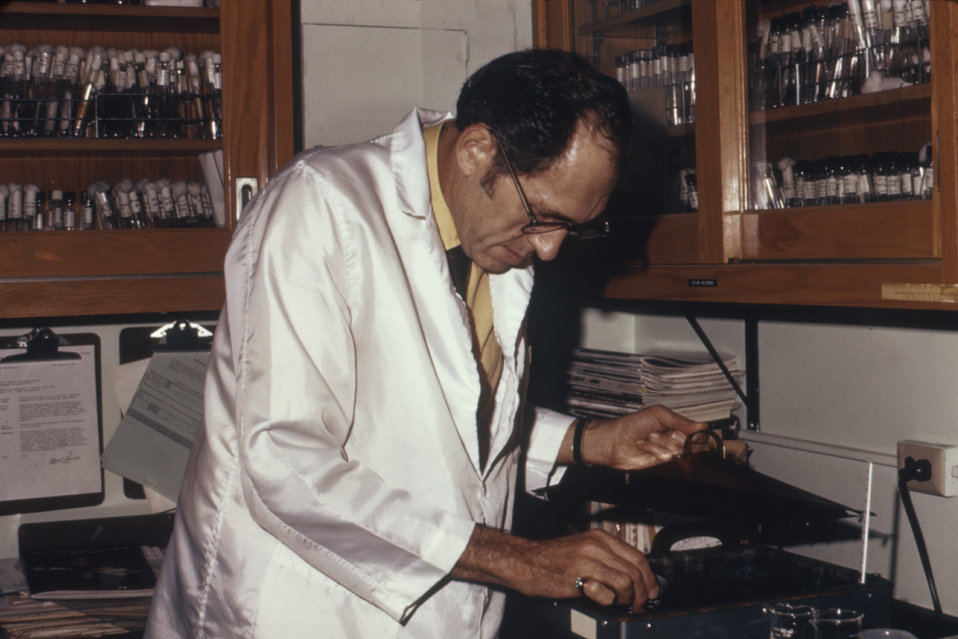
This is a photograph of Dr. William Kaplan, formerly of the CDC's Mycology Division, Bureau of Labs.